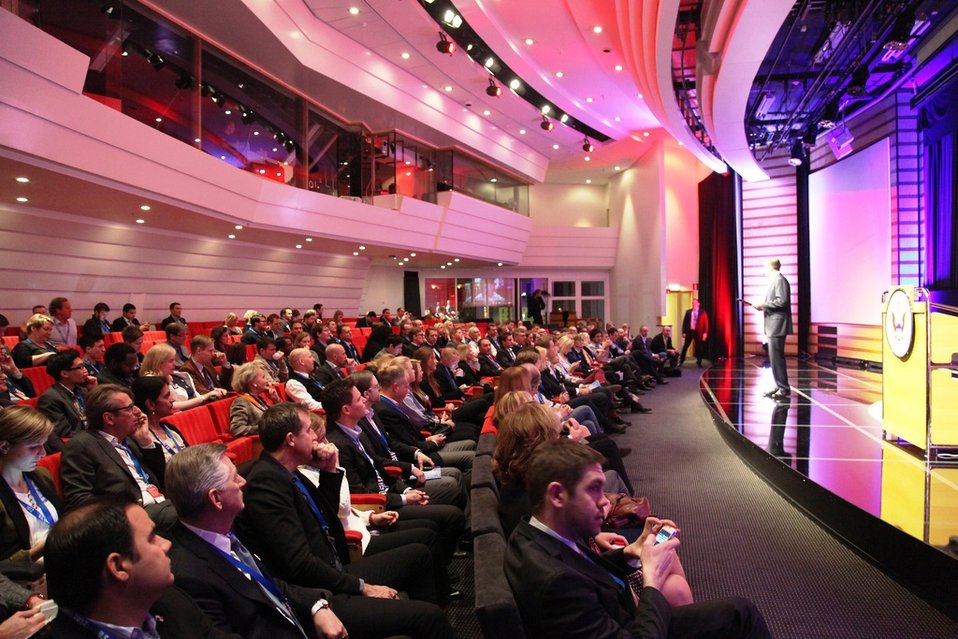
Embassy Stockholm Holds a Breakfast for the 2012 Presidential Election

The U.S. Embassy in Stockholm, Sweden, together with its partners CNN and Prime, hold a 2012 Presidential Election breakfast in central Stockholm in the early hours of the morning on November 7, 2012.